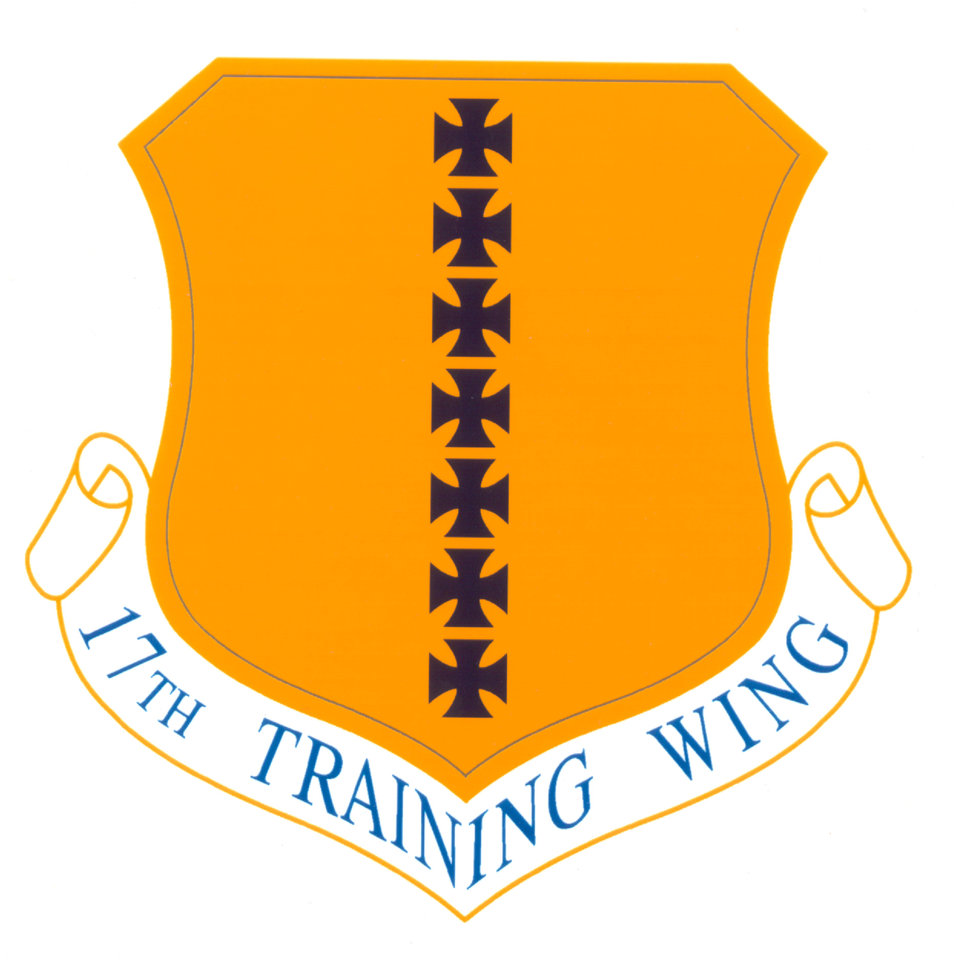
17th Training Wing shield